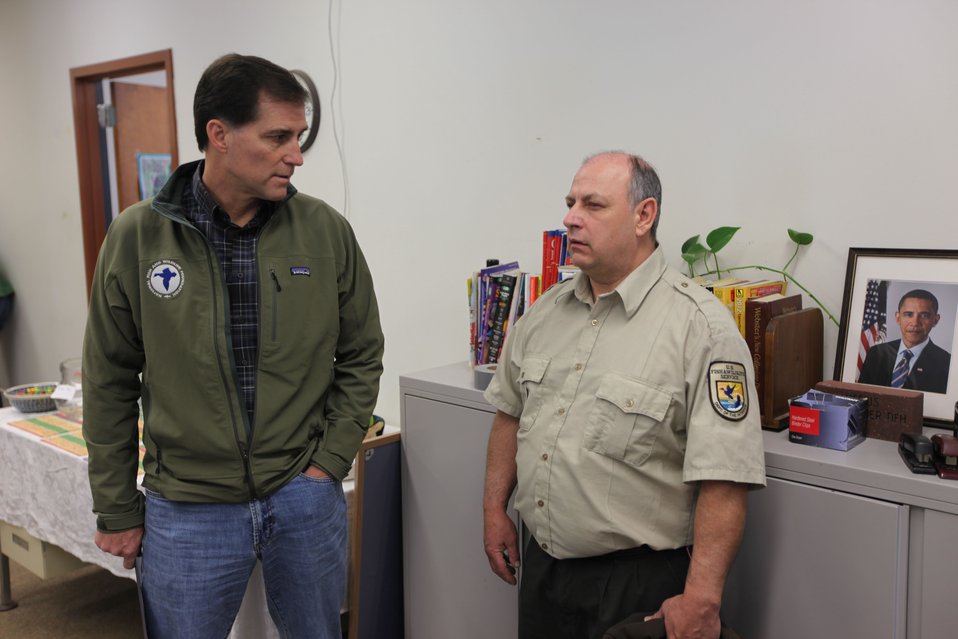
Dan Ashe & Les Miller

U.S. Fish & Wildlife Service Director Dan Ashe visits the Northeast Region
for a tour of the White River National Fish Hatchery in Bethel, Vermont on
April 27, 2012. The hatchery was devastated by Tropical Storm Irene and
Dan Ashe had the chance to meet and thank the staff for their heroic work.
Director Ashe also visited restoration/flood response/fish passage project
sites in Rochester, Vermont and met with local officials and staff from the
White River Partnership.